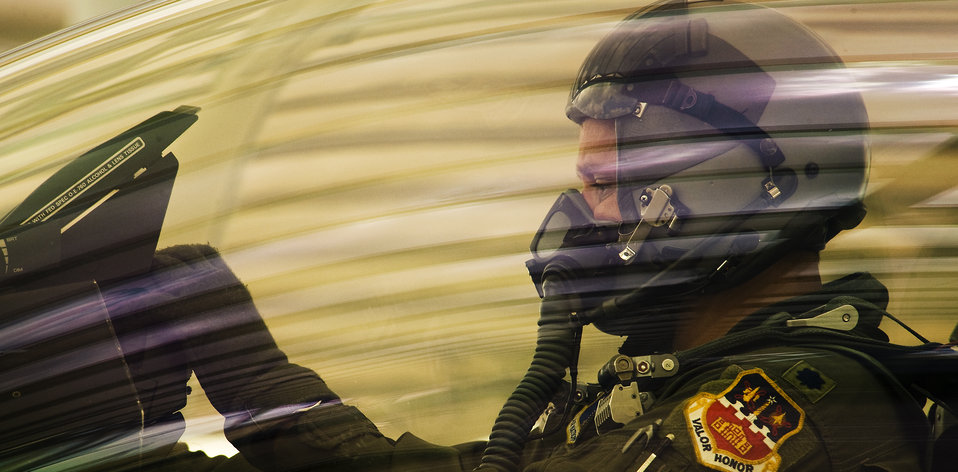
Ready for a fight

Lt. Col. Christopher